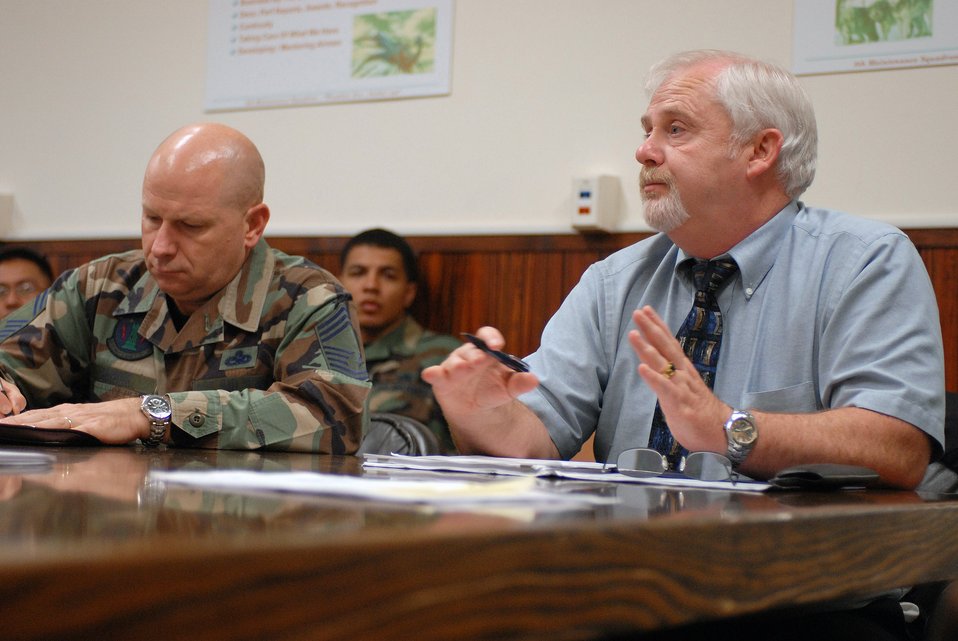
Task force visits Kunsan to study how Airmen use their time

Giles Smay speaks to members of the 8th Maintenance Squadron Aug. 20 at Kunsan Air Base, South Korea. The study focused on Airmen with extra duties and how it affects their jobs. Mr. Smay is with the Air Force Manpower Agency.